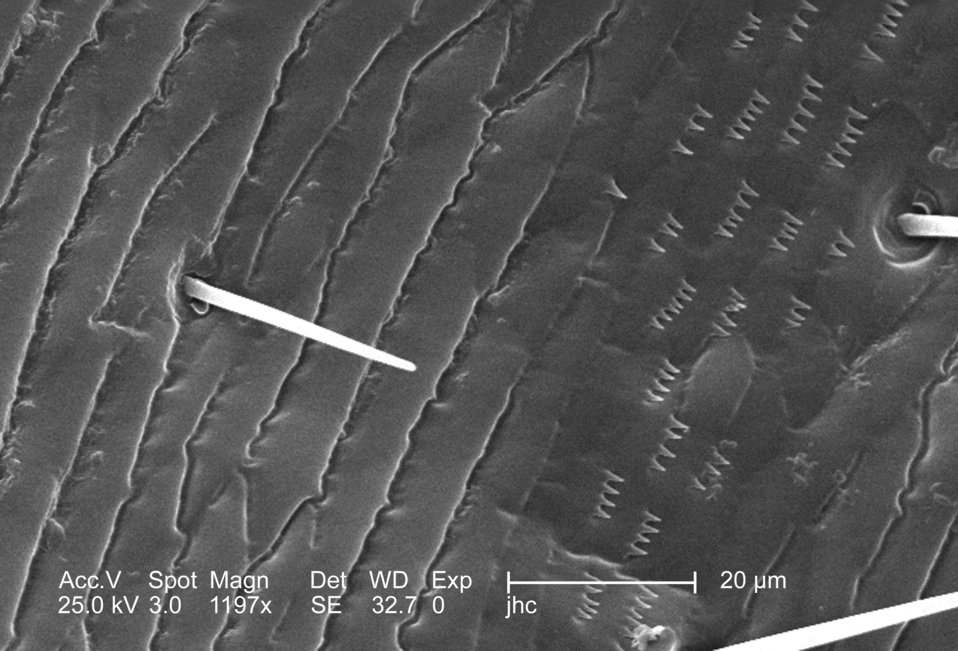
Magnified 1197x, this 2006 scanning electron micrograph (SEM) depicted an enlarged view of the chitinous, exoskeletal surface of a male louse, Pediculus humanus var. corporis. In this particular view, the exoskeletal adornments are few, consisting of small, spike-like structures and a number of setae, or sensorial 'hairs'. Quite often the shape and size of these skeletal adnexae are quite complex, with forms following functions, which are just as varied. The exoskeleton is composed of chitin, a molecule made up of bound units of acetylglucosamine, which is joined in such a way as to allow for increased points at which hydrogen bonding can occur. In this way chitin provides increased strength, and durability as an exoskeletal foundation.